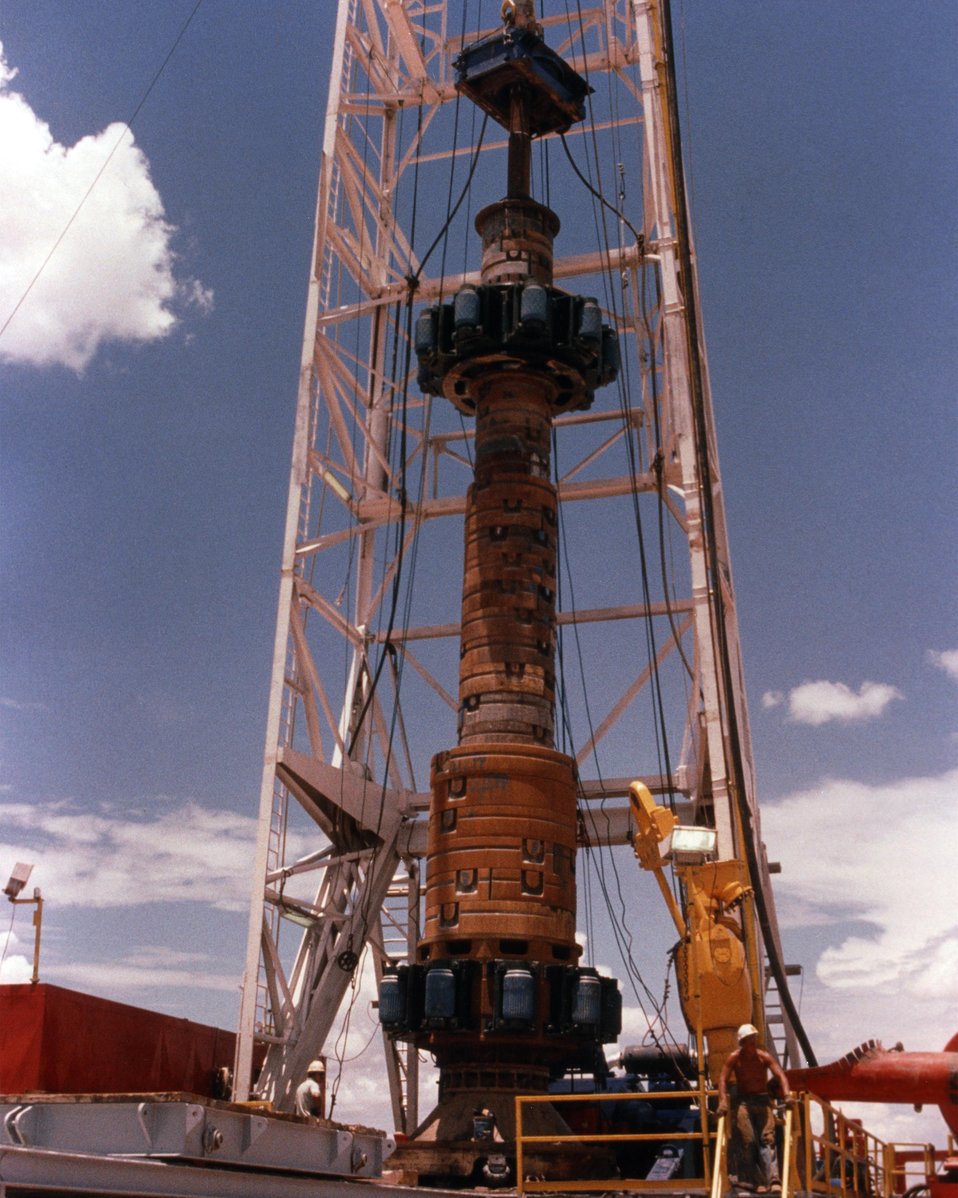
THE MANDREL, A 60-FOOT-LONG PIPE AND MOUNTING BRACKET, CARRIES THE STABILIZERS, WEIGHTS AND DRILL BIT.

THE WASTE ISOLATION PILOT PLANT IS A DOE RESEARCH AND DEVELOPMENT FACILITY FOR DEMONSTRATING THE SAFE DISPOSAL OF TRANSURANIC RADIOACTIVE WASTES. TEST SHAFTS HAVE BEEN DRILLED TO A DEPTH OF 2,100 FEET. THE SHAFTS, ONE 6 FEET IN DIAMETER AND THE OTHER 12 FEET IN DIAMETER, PROVIDE AN ENTRY PASSAGE AND VENTILATION TO THE UNDERGROUND SALT ROCK FORMATION THAT IS BEING TESTED TO DETERMINE ITS SUITABILITY FOR RADIOACTIVE WASTE STORAGE. THE MANDREL WEIGHTS, CALLED SPLIT DONUTS, RANGE FROM ABOUT 8,000 LBS. TO 27,000 LBS. EACH. THESE WEIGHTS ARE REQUIRED TO PROVIDE WEIGHT ON THE DRILLING STEM FOR DRILLING DEEP HOLES. TO FACILITATE PROPER ALIGNMENT, A STABILIZER WITH ROLLERS IS USED, THIS PREVENTS THE BIT FROM DEFLECTING OFF THE SIDES OF THE HOLE.